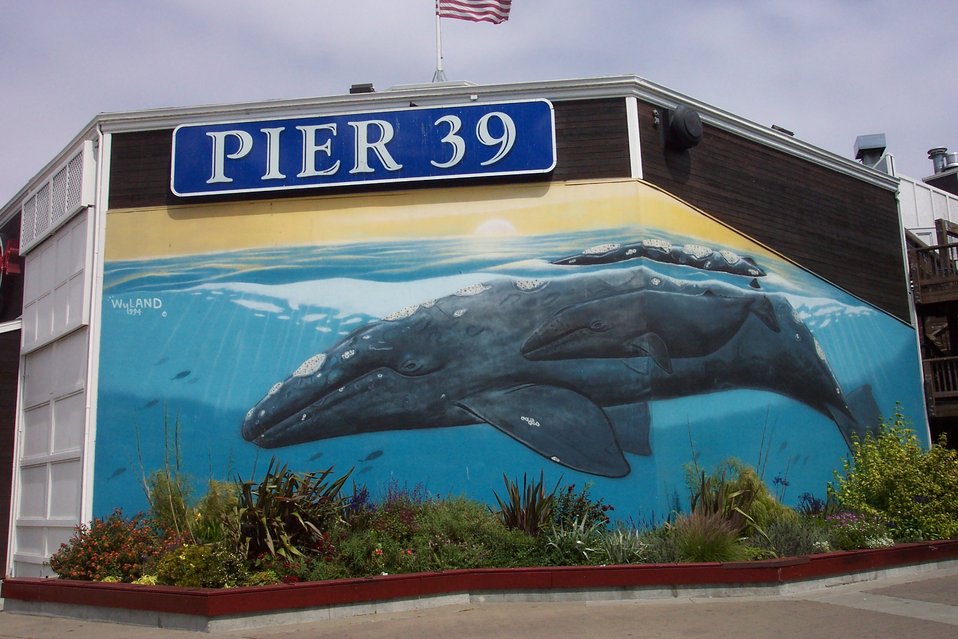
A humpback whale mural of mother and calf at Pier 39, near Fisherman's Wharf.